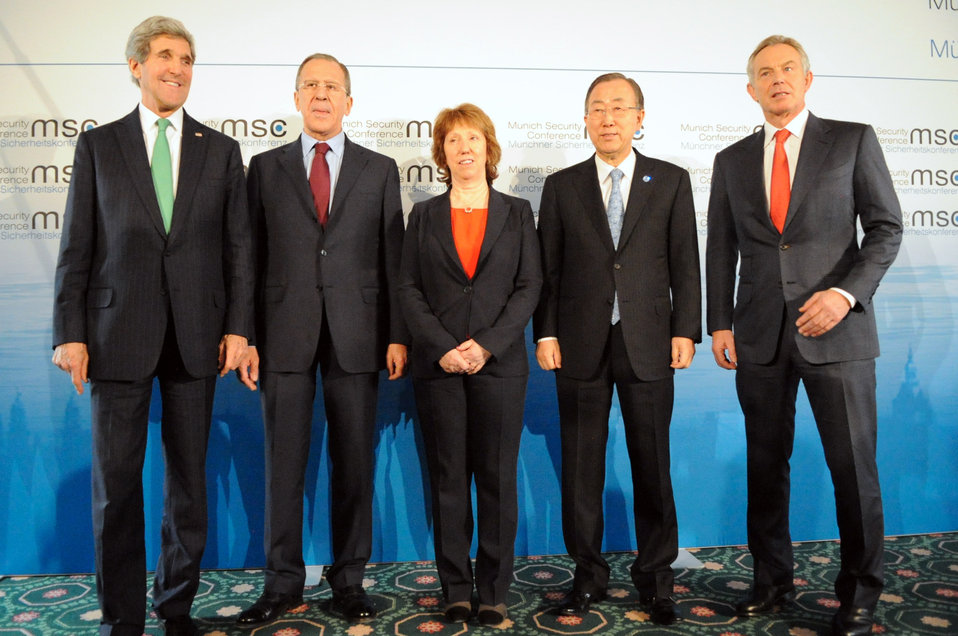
Quartet Members Pose For Photo Before Meetings in Sidelines of Munich Security Conference

Members of the Quartet on the Middle East, from left to right, U.S. Secretary of State John Kerry, Russian Foreign Minister Sergey Lavrov, EU High Representative Catherine Ashton, UN Secretary-General Ban Ki-moon, and Special Envoy Tony Blair pose for photographers before a meeting on the sidelines of the Munich Security Conference in Munich, Germany, on February 1, 2014.